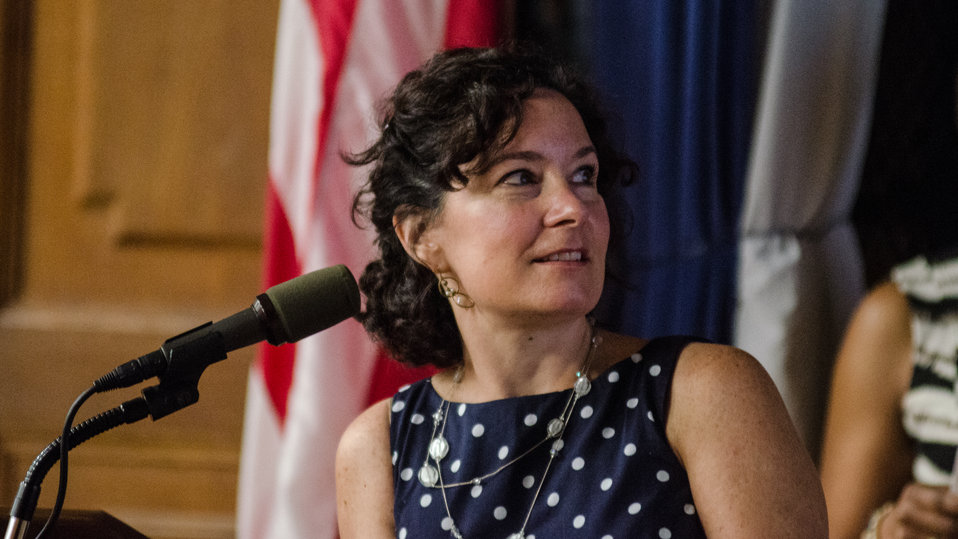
U.S. Department of Agriculture (USDA) Rural Development (RD) Deputy Under Secretary Patrice Kunech speaks at the USDA’s RD 2nd Annual Cultural Transformation kickoff opening ceremony and forums, themed “Employees Influencing Change,” on Tuesday, Aug. 13, 2013 USDA in Washington, D.C.